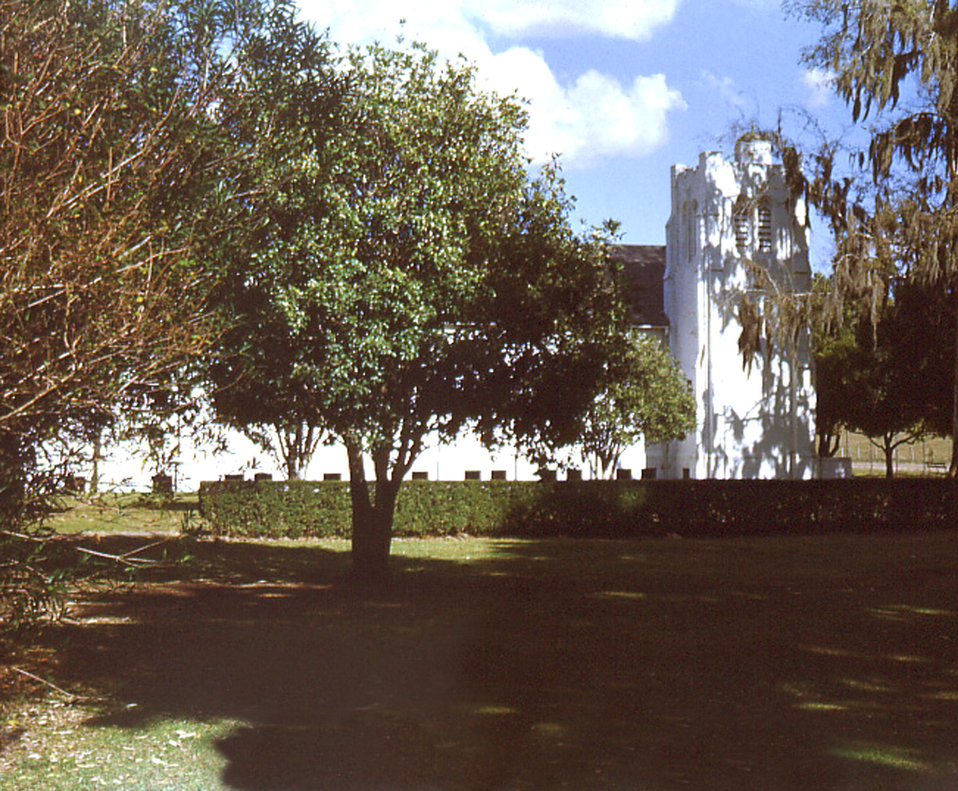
This photograph highlighted the Carville, Louisiana Leprosarium's Protestant Chapel, which together with the Catholic Chapel, were both built with religious-oriented contributions from throughout the United States."Patients of the U.S. Marine Hospital in Carville, Louisiana, produced a set of 35 mm slides around 1950 from which this image was derived. In 2002, a patient's son donated the set, the only one known in existence, to the museum. The father, a patient at Carville for several years, brought these slides home around 1950 to give his family a snapshot of life at the national leprosarium. The act of quarantining patients for leprosy (HD) remained law in the state of Louisiana until 1957."